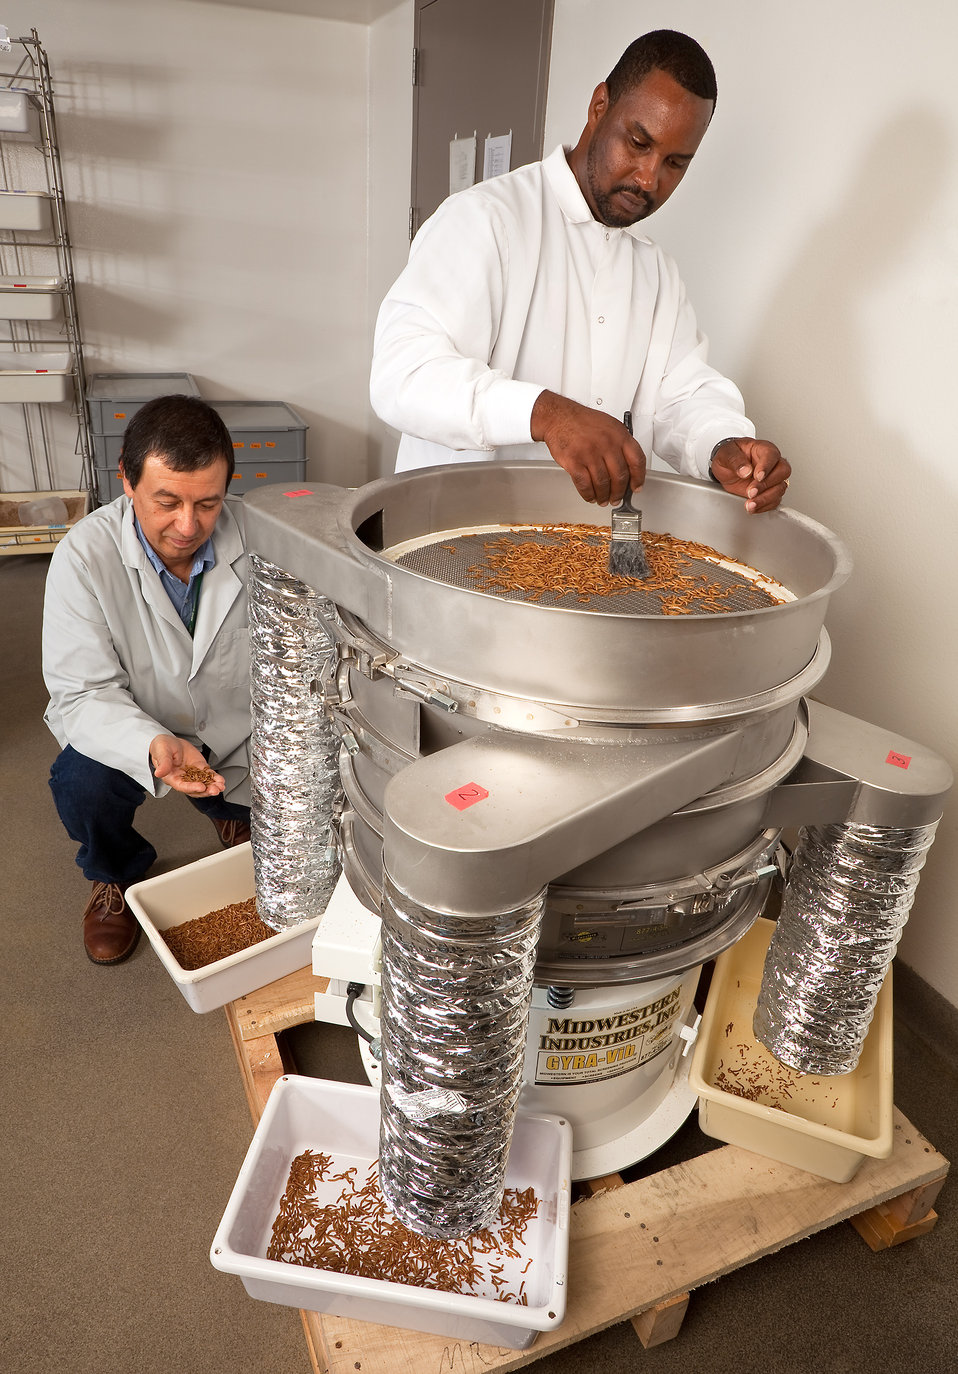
At the U.S. Department of Agriculture (USDA) Agriculture Research Service (ARS) entomologist Juan Morales-Ramos and insect production worker Matthew McDaniel use a scaled-down prototype of a separator they designed to sort mealworms by size on July 19, 2011.